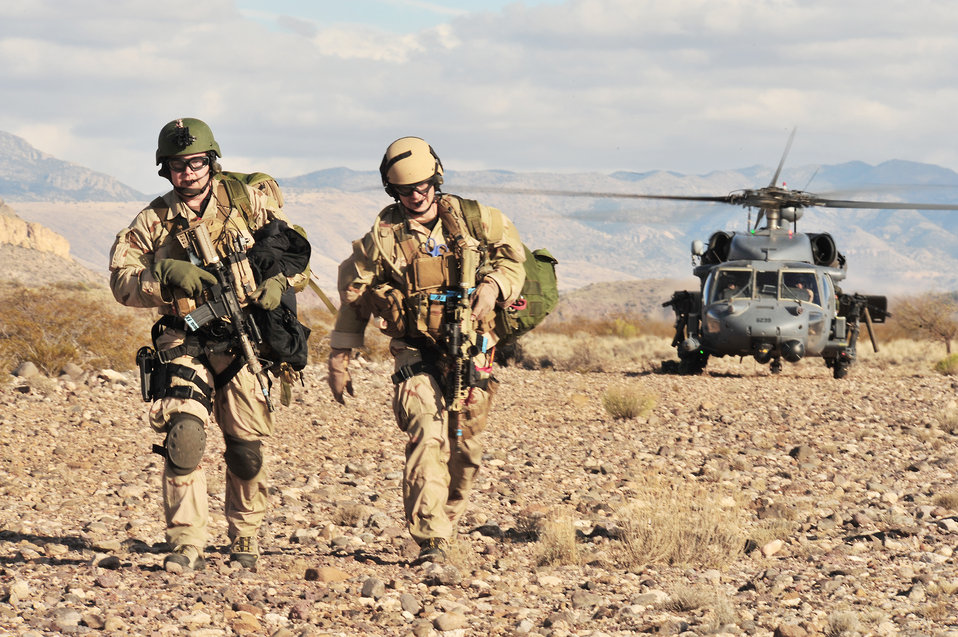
Air Combat Command officials to host multinational personnel recovery exercise

Two Air Force pararescuemen depart from a HH-60G Pave Hawk helicopter to aid casualties during Exercise Angel Thunder 2008. More than 800 ground recovery members took part in Angel Thunder 2008, the world's largest personnel recovery and combat search and rescue exercise. Angel Thunder 2010 is scheduled for April 12 through 23 at Davis-Monthan Air Force Base, Ariz.